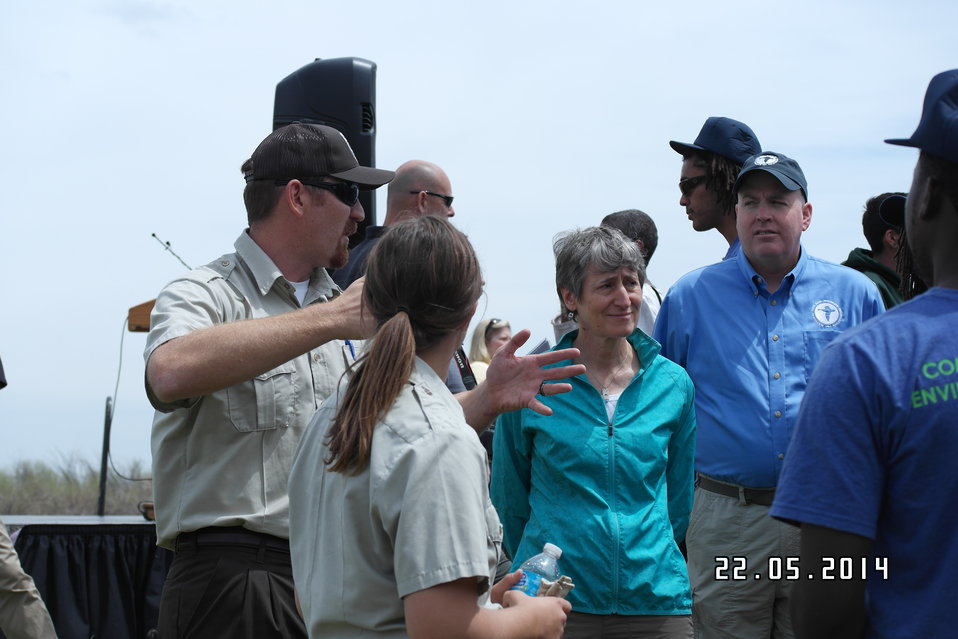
Secretary Jewell Announces $6.7 for Youth Conservation Job

Interior Secretary Sally Jewell helps local youth conservation groups plant cottonwood trees at Rocky Mountain Arsenal National Wildlife Refuge.